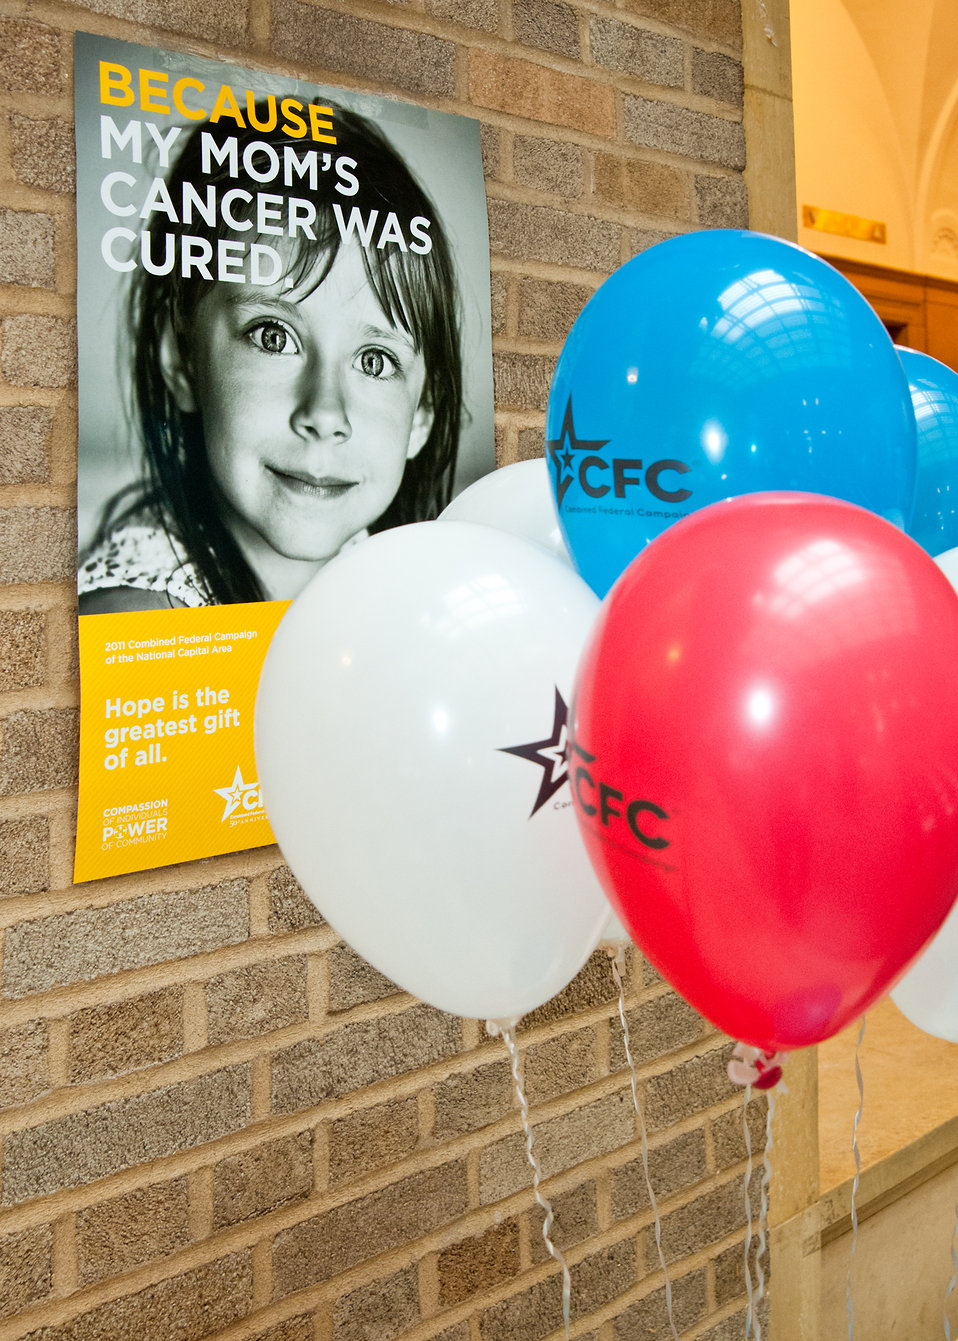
Balloons and posters displayed during the U.S. Department of Agriculture 2011 Combined Federal Campaign “Compassion of Individuals, Power of Community” at the USDA in Washington, DC, on Wednesday, September 21, 2011. The theme of the 2011 campaign is “Celebrating 50 Years of Caring, Serving and Giving.”